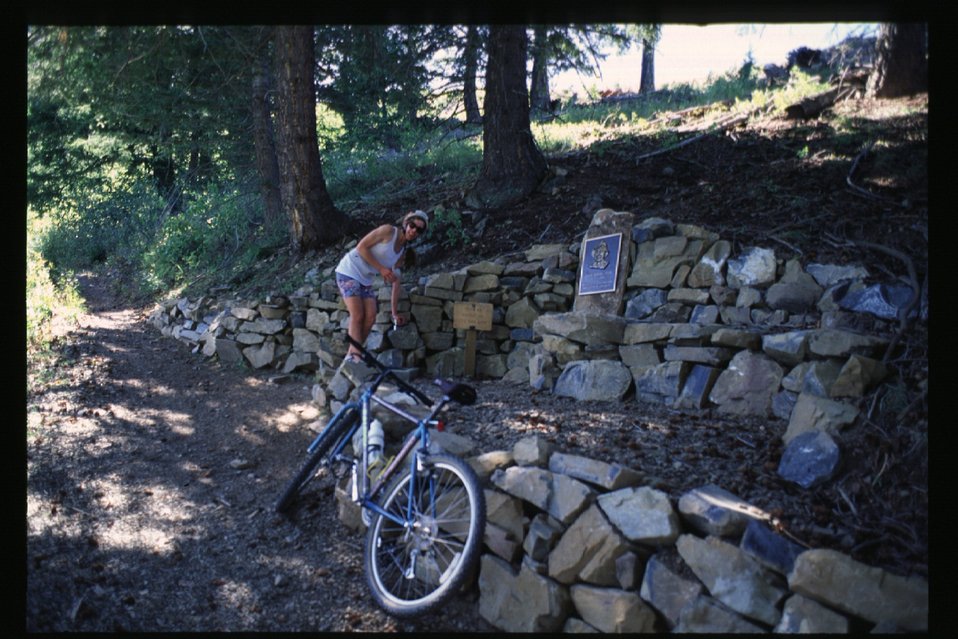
Recreation Scenic Biker Shoshone Field Office USRD Upper Snake River District